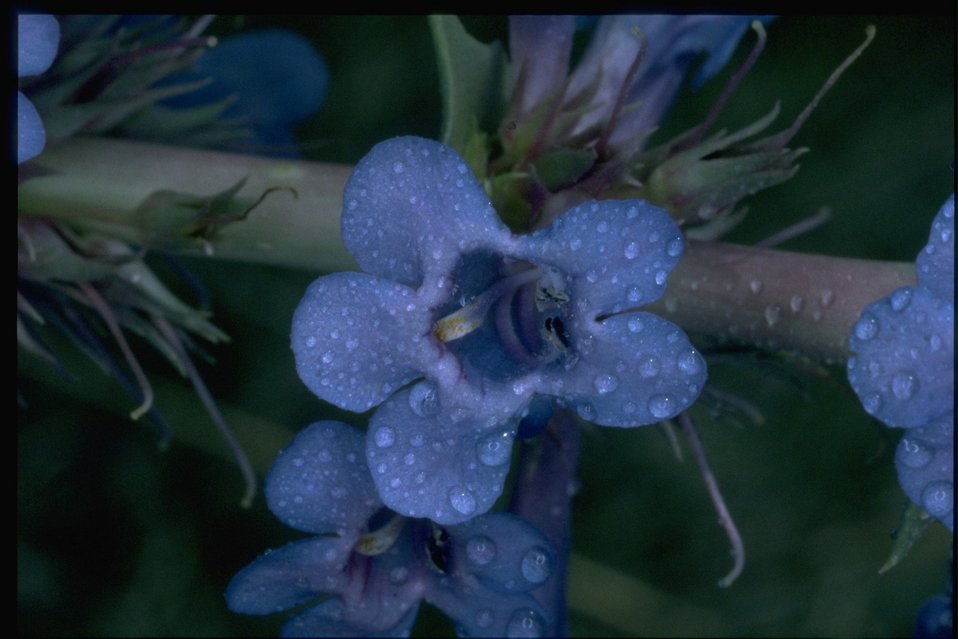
Closeup shot of Sand Penstemon (Penstemon acuminatus).